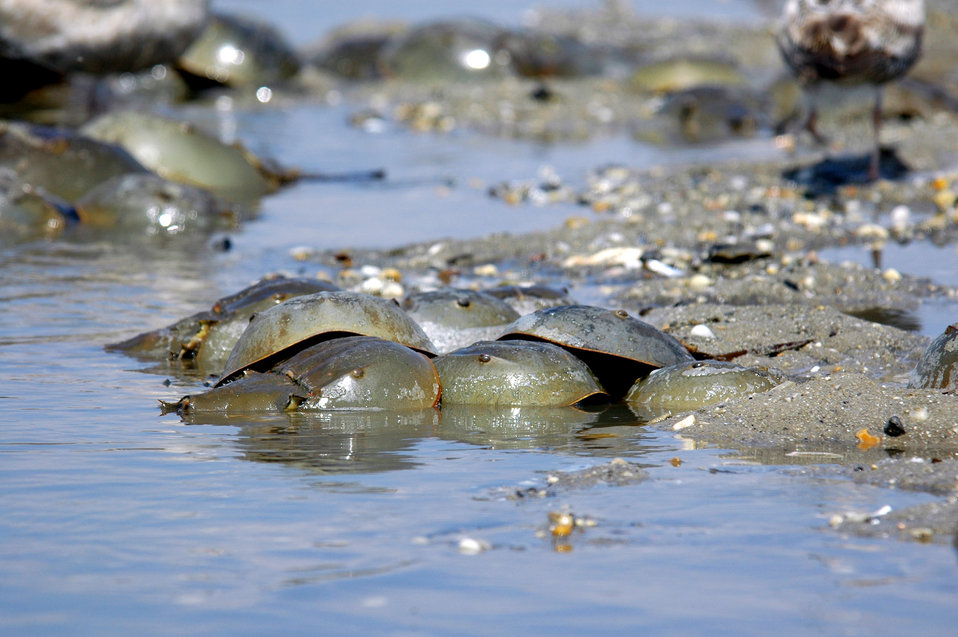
Horseshoe Crab

Mispillion Harbor, Delaware.